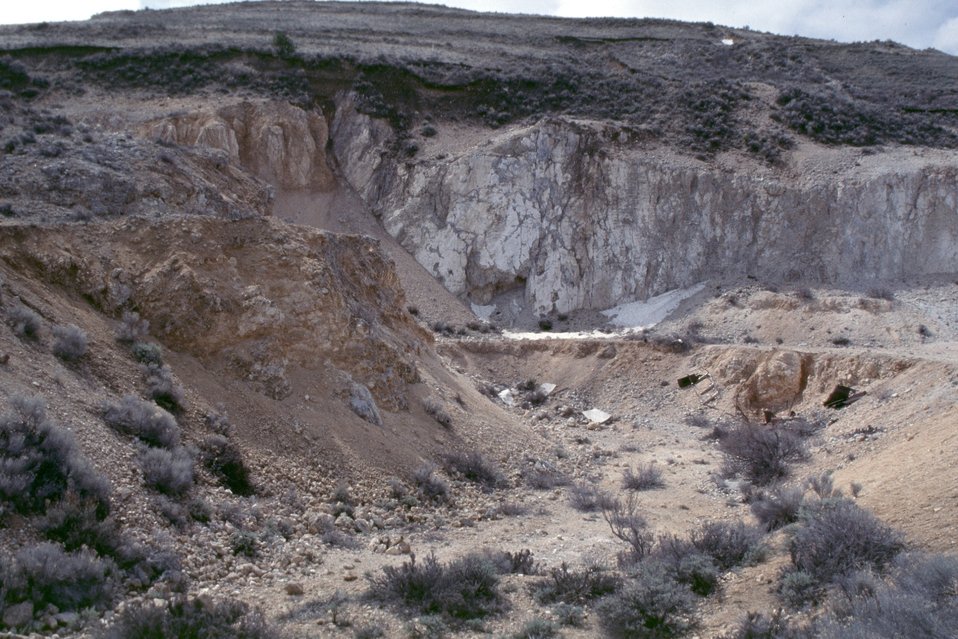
AML Glass Buttes, bunkhouse area, Burns District This trench was probably the site of an adit that was excavated in approximately 1957, and then that adit was daylighted by dozer work probably between 1967 to 1970. Ore mineralization apparently did not extend beyond the fault plane exposed in the cliff wall. In the center of the photo you can see where the adit was extended a few feet beyond the fault to search for a continuation of the ore-bearing rock.